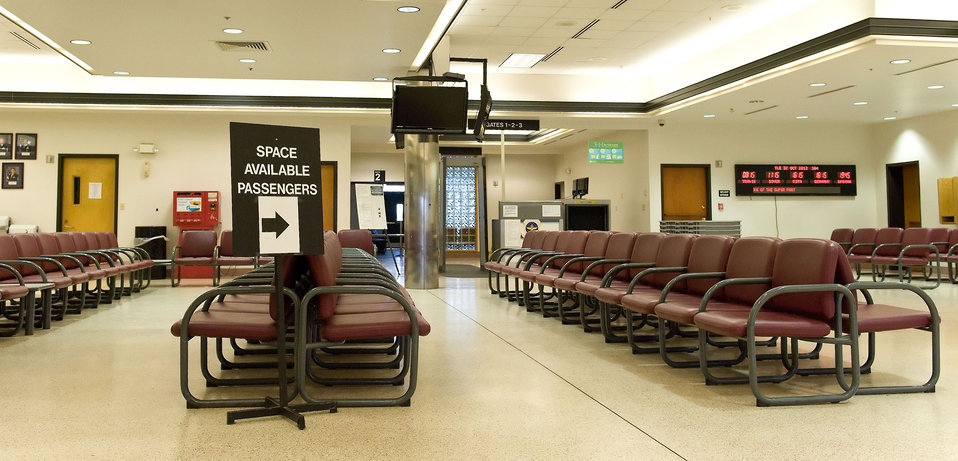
Dover Air Force Base prepares

The passenger terminal stands completely empty Oct. 30, 2012, at Dover Air Force Base, Del. Space-available travel was suspended prior to the arrival of Hurricane Sandy.